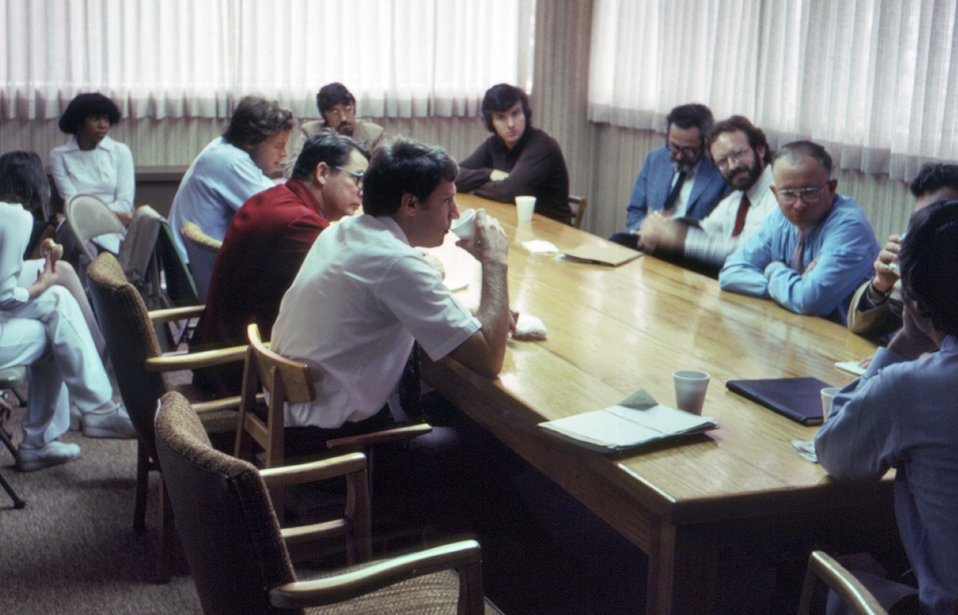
This 1979 photograph depicted a meeting that included administrators of the CDC, and at the time Georgia Baptist Hospital, now known as the Atlanta Medical Center, who had gathered to discuss plans for a containment facility at the hospital.